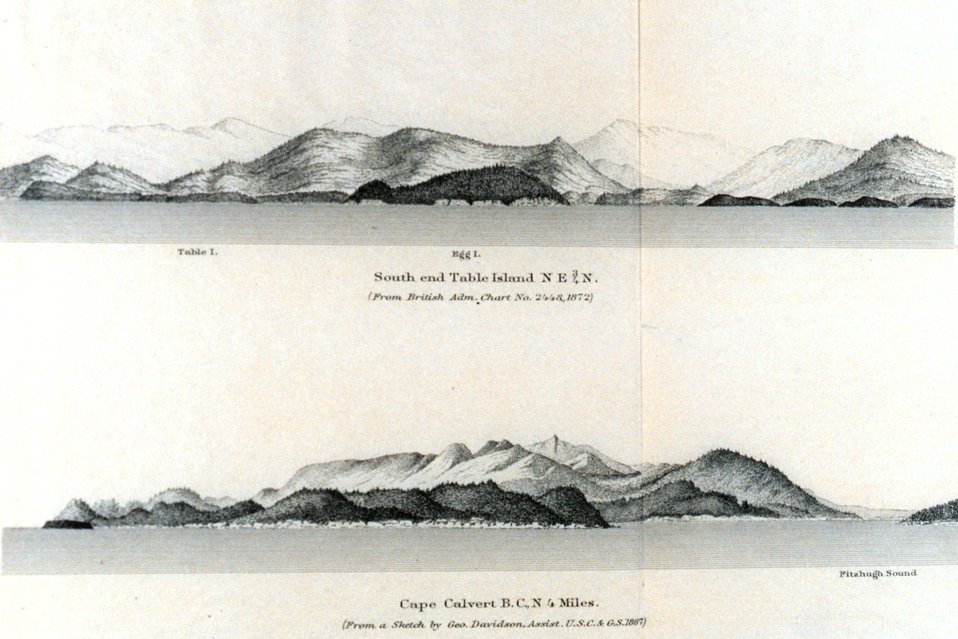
South End Table Island. Cape Calvert. In: Pacific Coast Pilot Alaska Part I 1883. P. 20. Library call number VK943 .N3 1883.